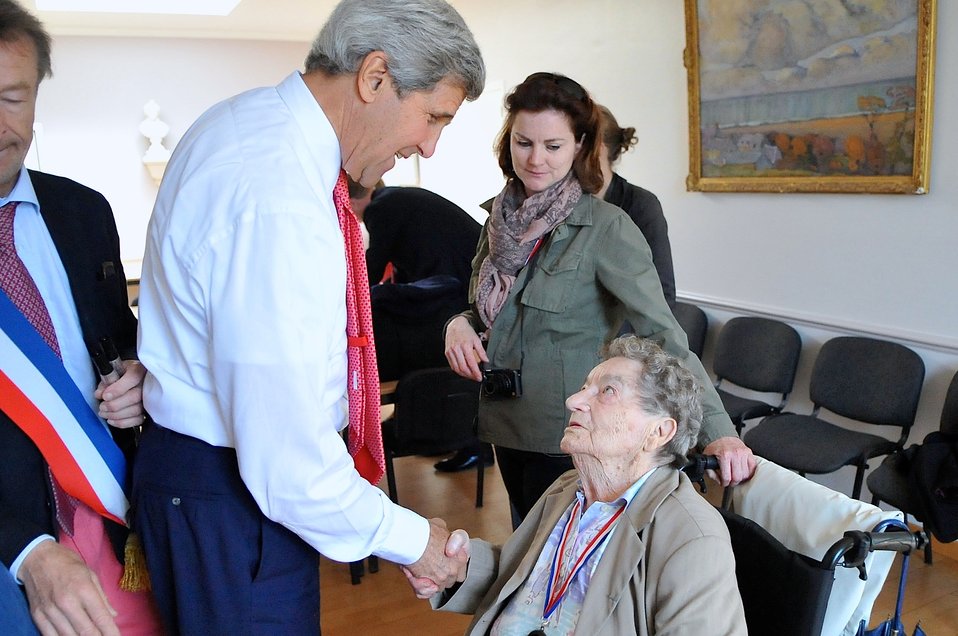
Secretary Kerry Greets Famed WWII Photo Subject Leluaut Before Commemorative Ceremony in Saint Briac

U.S. Secretary of State John Kerry greets Simone Leluault, a background subject in World War II photographer Tony Vaccaro's most famed photo, on June 7, 2014, as he attended a ceremony in Saint Briac, France, to commemorate the 70th anniversary of D-Day and to rename the Brittany town's square in Vaccaro's honor.